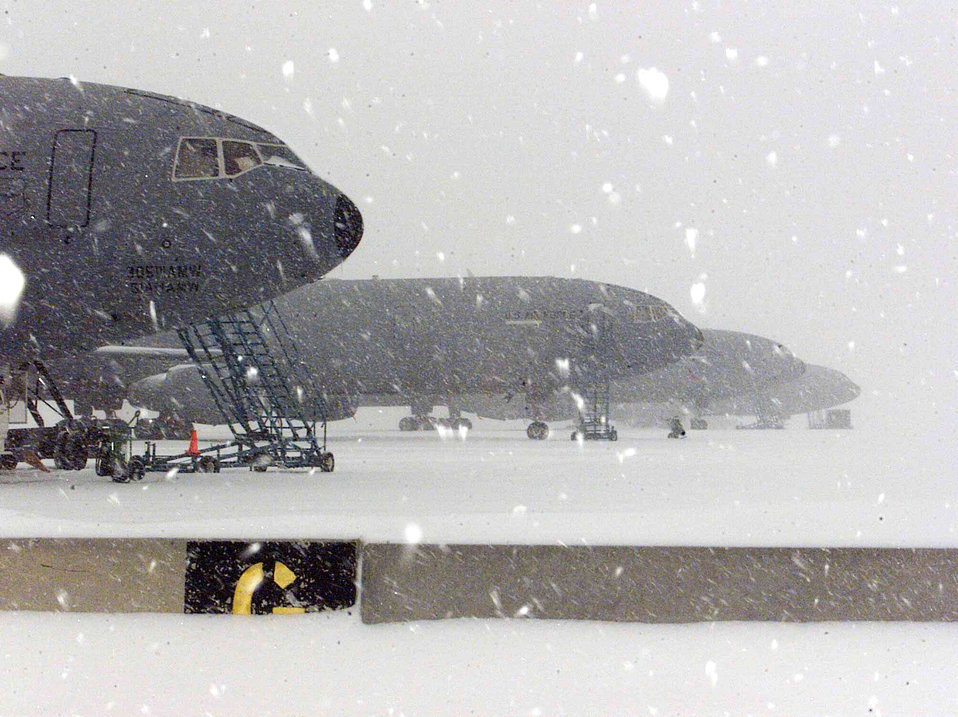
Snow daze

MCGUIRE AIR FORCE BASE, N.J. (AFPN) -- KC-10 Extenders brave the brunt of the